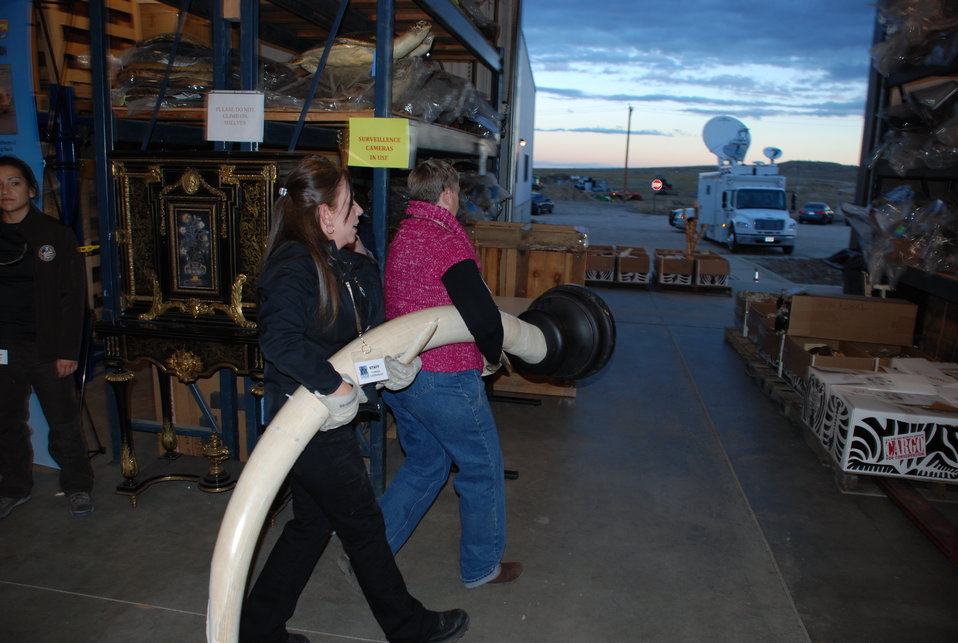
Before sunrise crews began loading ivory which FWS seized during undercover investigations of organized smuggling operations or confiscating at the U.S. border over the past 25 years.